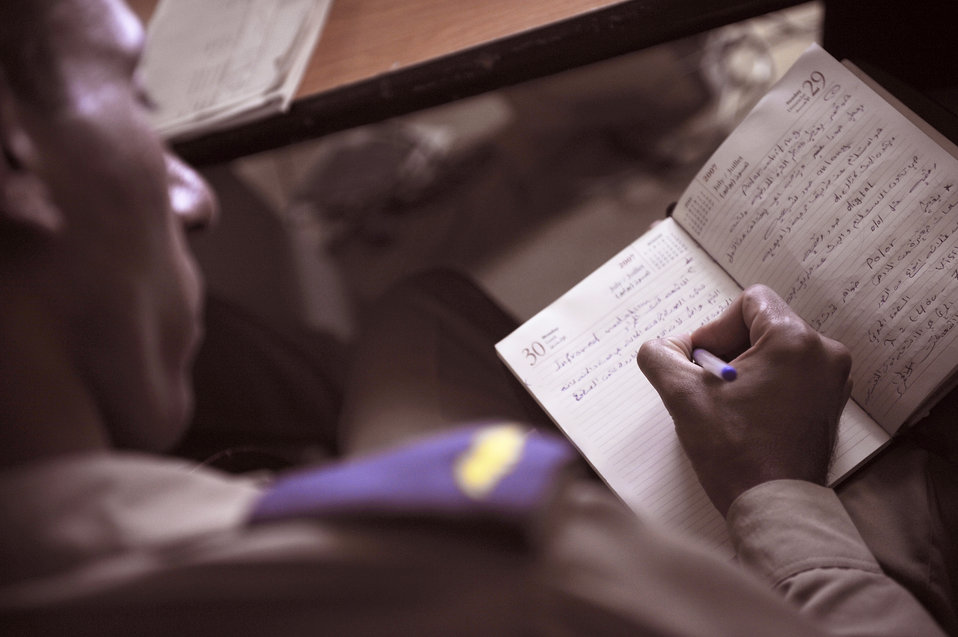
U.S. advisers help Iraqis kick off weather forecaster program

An Iraqi air force cadet takes notes during a weather course taught by Iraqi instructors June 14, 2011, at the IqAF's weather center in Baghdad. Air Force weather advisers have been training the initial cadre of IqAF's weather forecasters over the past three years.